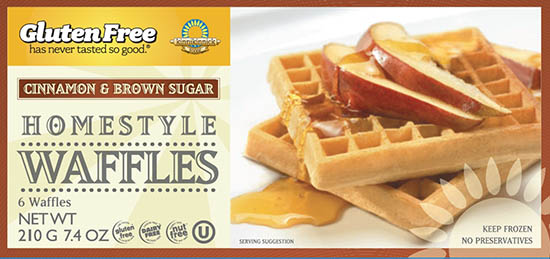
RECALLED – Waffles, Mix, Bread Crumbs

January 8, 2014 – Product Recall – Allergy Alert - Undeclared Milk in Five Kinnikinnick Foods Products.